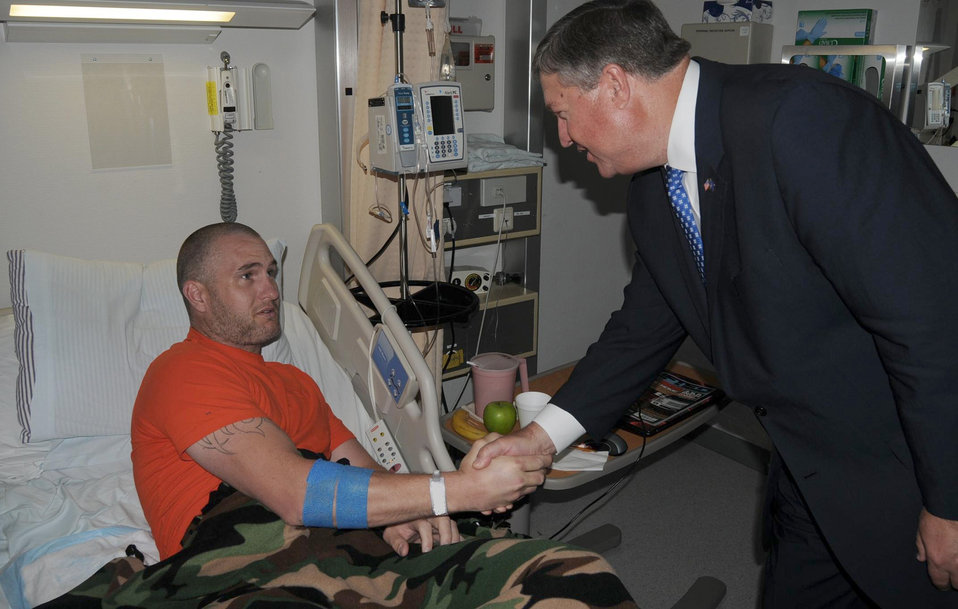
SecAF at Ramstein

Secretary of the Air Force Michael Donley visits Tech. Sgt. Ryan McGahan June 18, 2011, at Landstuhl Regional Medical Center, Germany. Sergeant McGahan is assigned to the 86th Maintenance Operations Squadron at Ramstein Air Base, Germany.